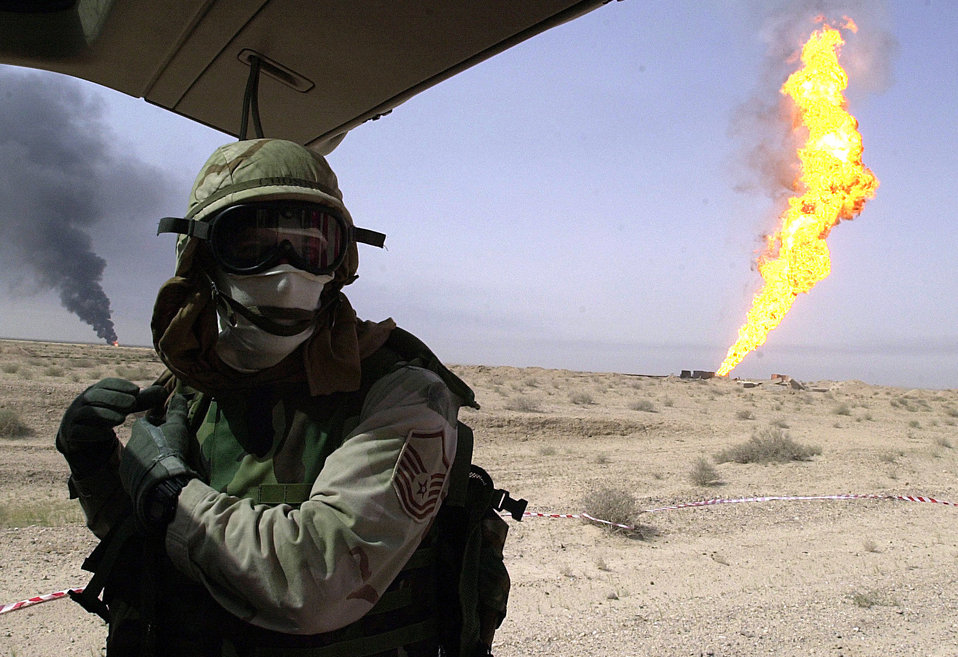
Danger zone

OPERATION IRAQI FREEDOM -- Master Sgt. Joe Cross, Explosives Ordinance Disposal Craftsman, ropes off a safe area far from an uncontrolled natural gas fire in the AR Rumaylah Oil Field in southern Iraq. Cross is with the 384th EOD Flight, Bahrain. Operation Iraqi Freedom is the multinational coalition effort to liberate the Iraqi people, eliminate Iraq's weapons of mass destruction and end the regime of Saddam Hussein.